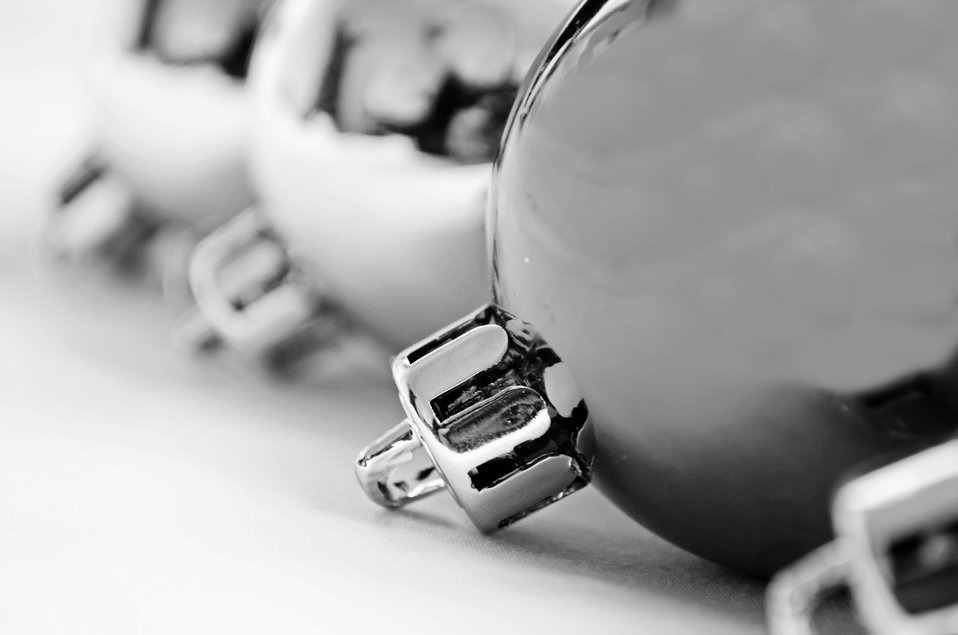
Christmas decoration.